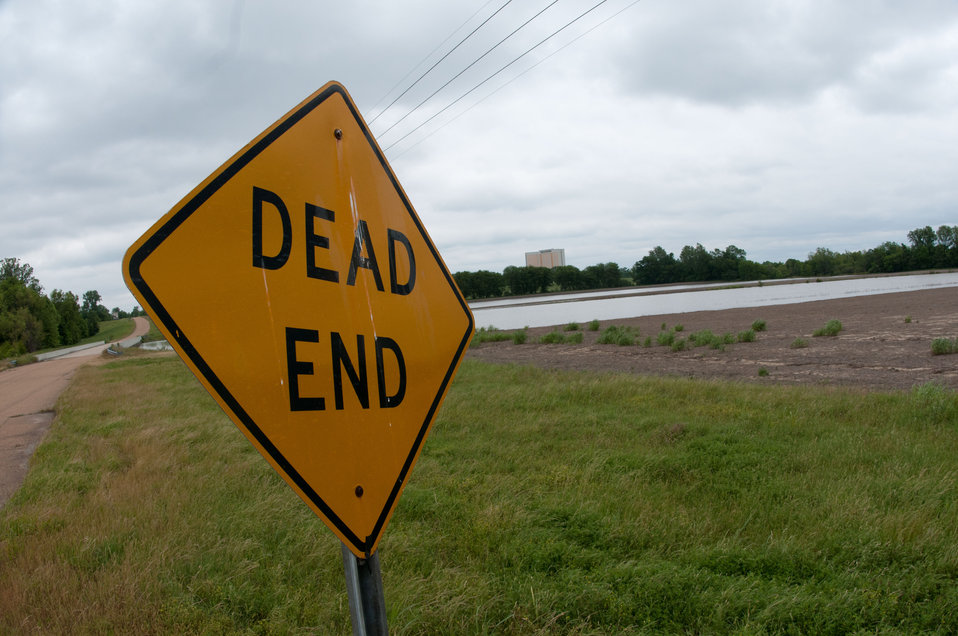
Floods waters from Mississippi River inundated casinos and farms that surround Tunica, MS, on Sunday, May 15. 2011.